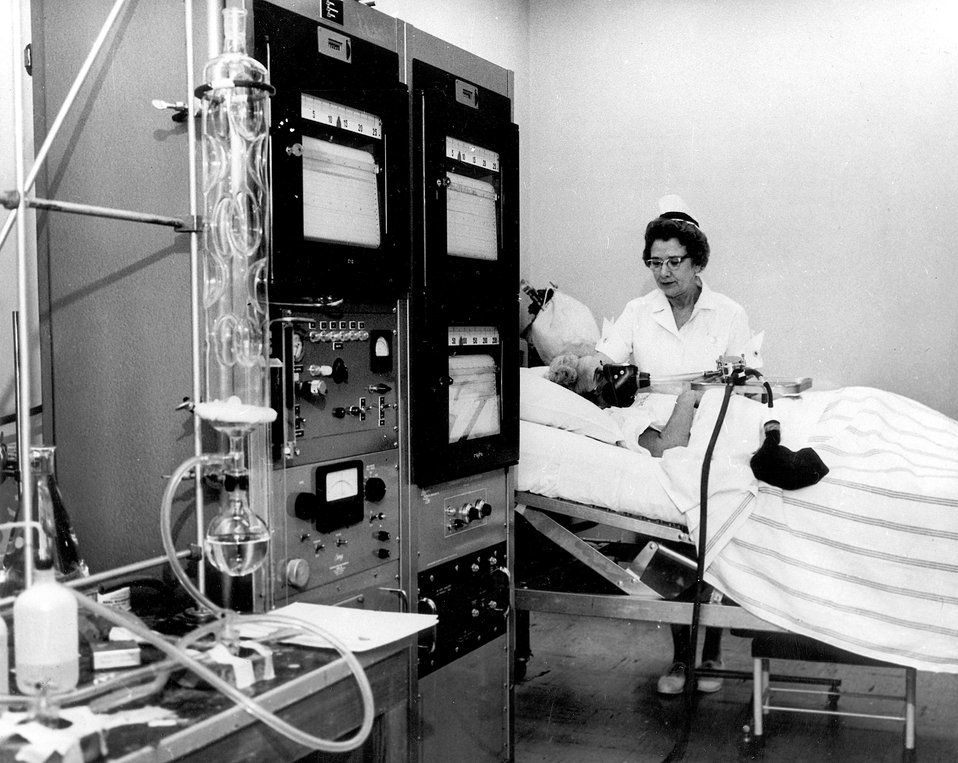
In studies of intermediary metabolism of carbohydrates and amino acids, which have been labeled with radioactive carbon and tritium, the breath of a patient is collected for continuous measurement of the C14 O2.
c.1963